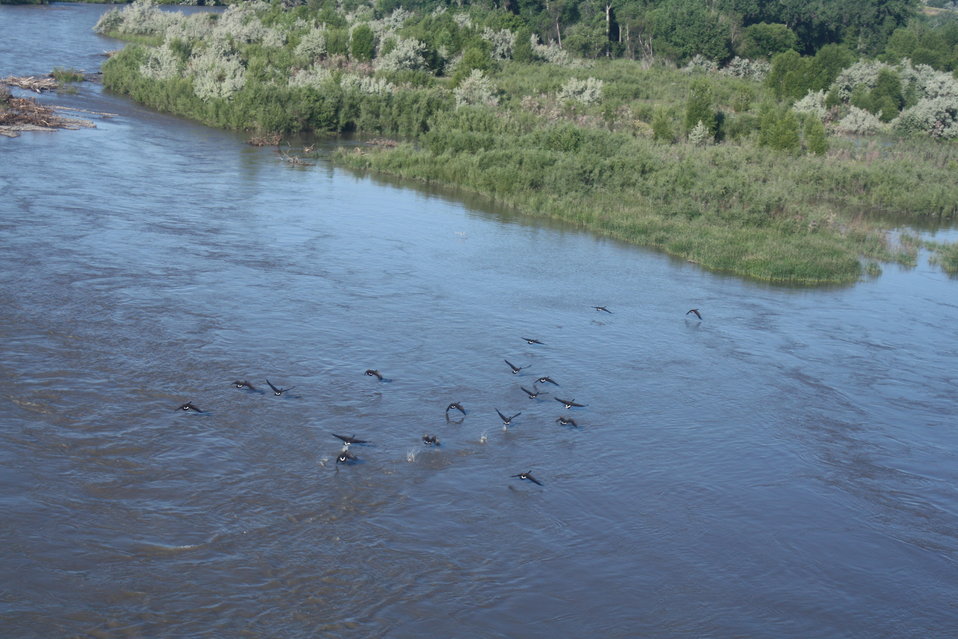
Aerial Wildlife Survey

A flock of waterfowl traverse the Yellowstone River July 9, 2009. The U.S. Fish and Wildlife Service conducts daily aerial wildlife surveys to identify, monitor and assess potentially oiled wildlife and their habitats.